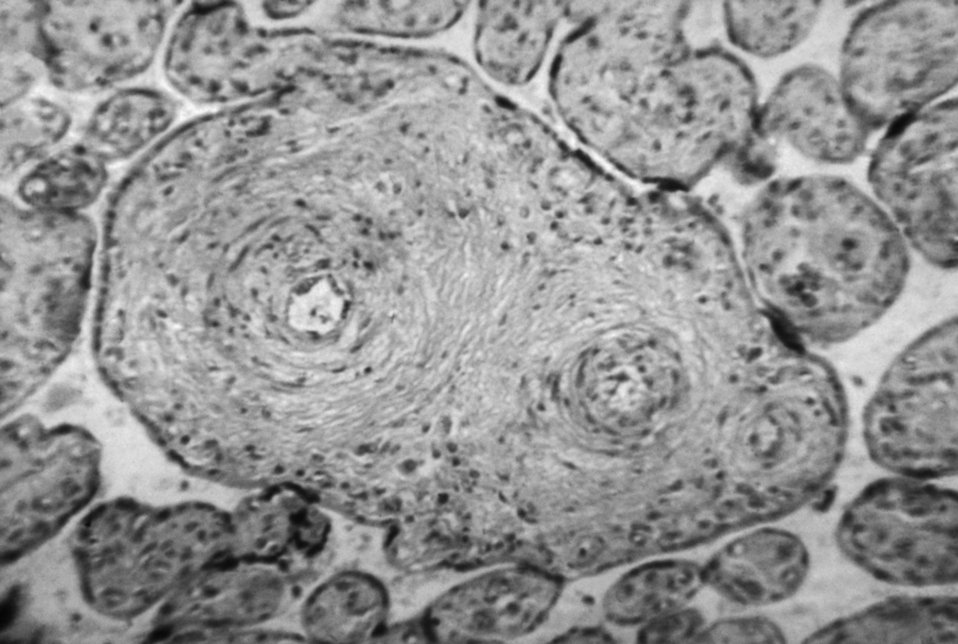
A photomicrograph revealing cytoarchitectural changes seen in congenital syphilis of the placenta.